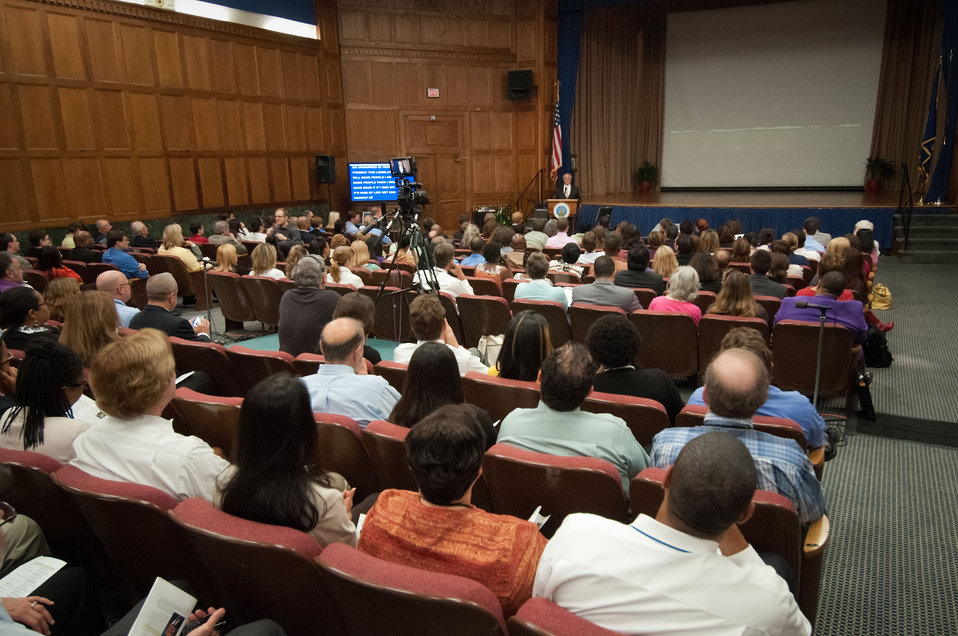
Rep. Barney Frank, First Congressional District of Massachusetts and Ranking Member of the House Financial Services Committee was the keynote speaker at the Lesbian, Gay, Bisexual and Transgender (LGBT) Pride Observance, “The Sum of Us: Lesbian, Gay, Bisexual and Transgender Pioneers” at the Lesbian, Gay, Bisexual and Transgender (LGBT) Pride Observance, “The Sum of Us: Lesbian, Gay, Bisexual and Transgender Pioneers” at the United States Department of Agriculture in Washington, D.C., Thursday, June 7, 2012.